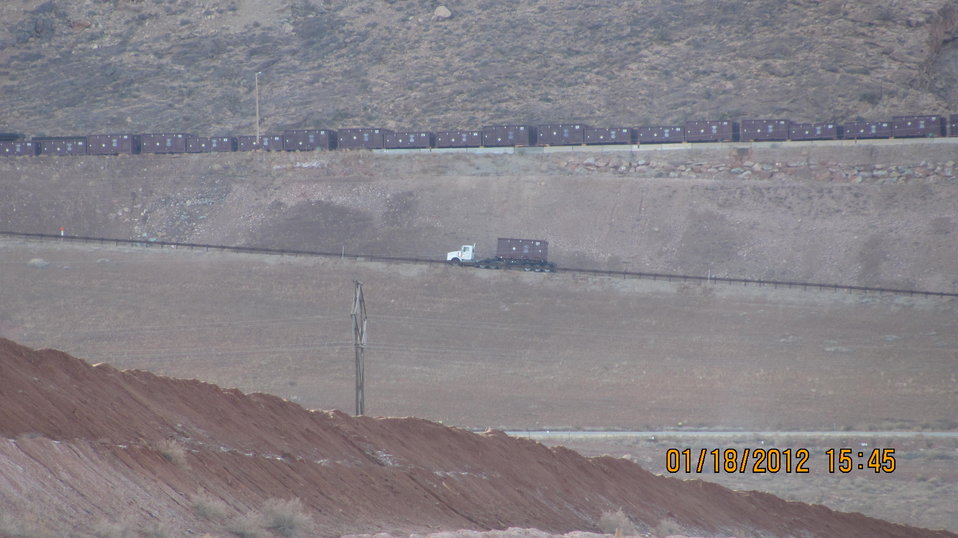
Moab - Last Truck of the Day

The last truck of the day carries a container full of uranium mill tailings to the rail bench up the hillside from the tailings pile at the Moab, Utah, site.